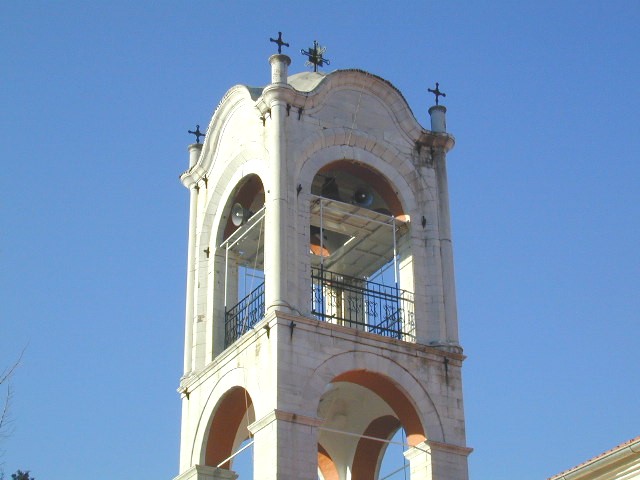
Saint Athanasios bell tower in Doxato